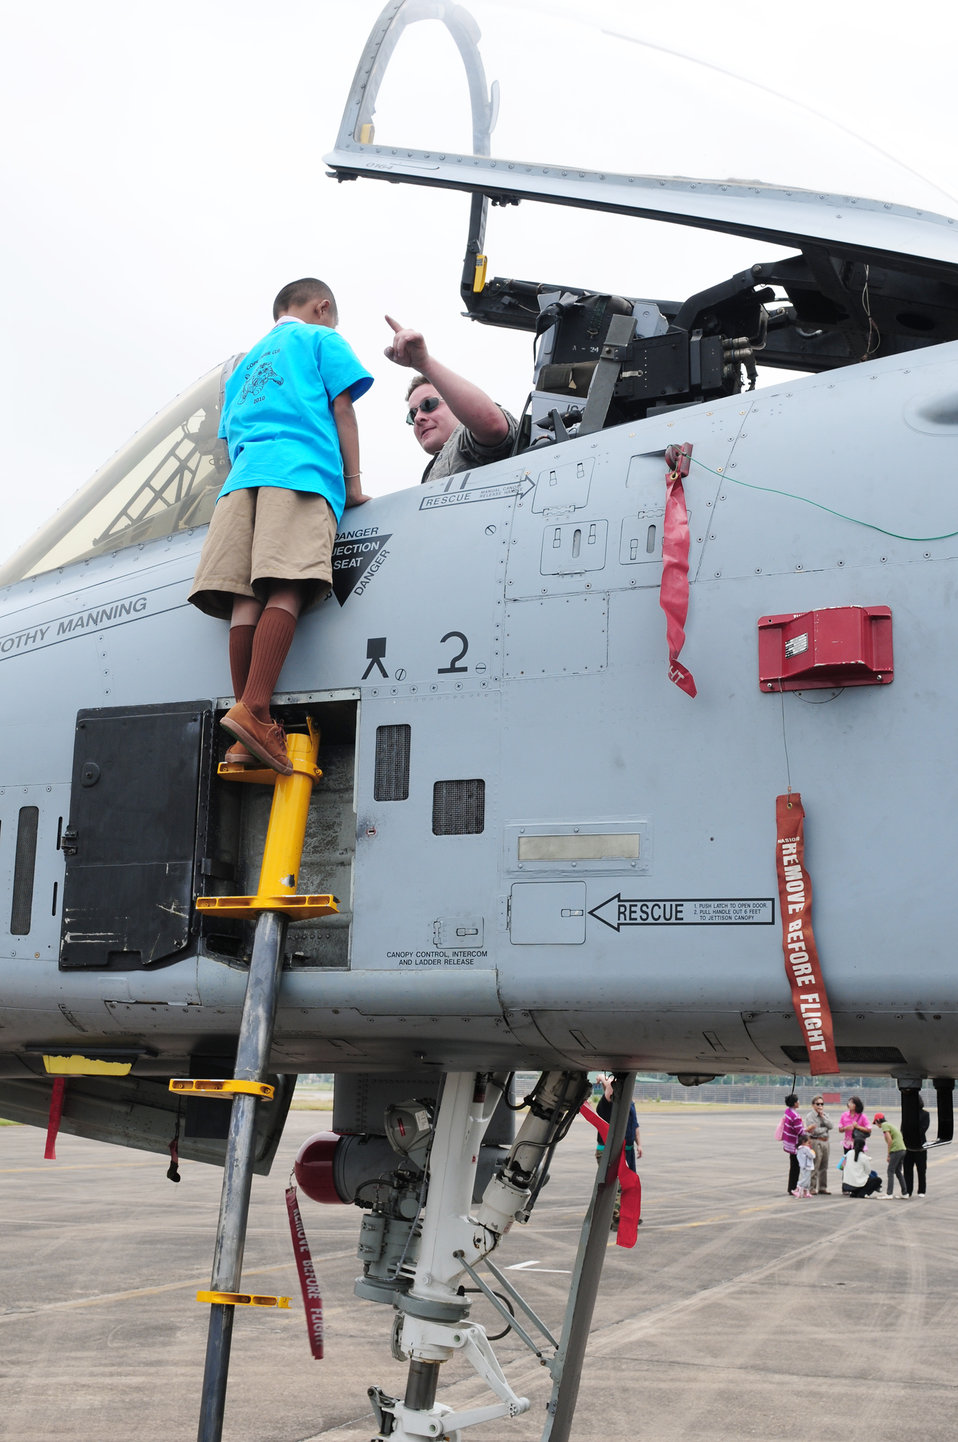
Cope Tiger 2010 open house

Senior Airman Ian Johnson explains the A-10 Thunderbolt II instrument panel to a Thai student during the Cope Tiger 2010 open house held for more than 50 Thai students March 10 at Udon Thani Royal Thai Air Force Base, Thailand. Airman Johnson is deployed to the exercise from the 25th Aircraft Maintenance Unit at Osan Air Base, South Korea.